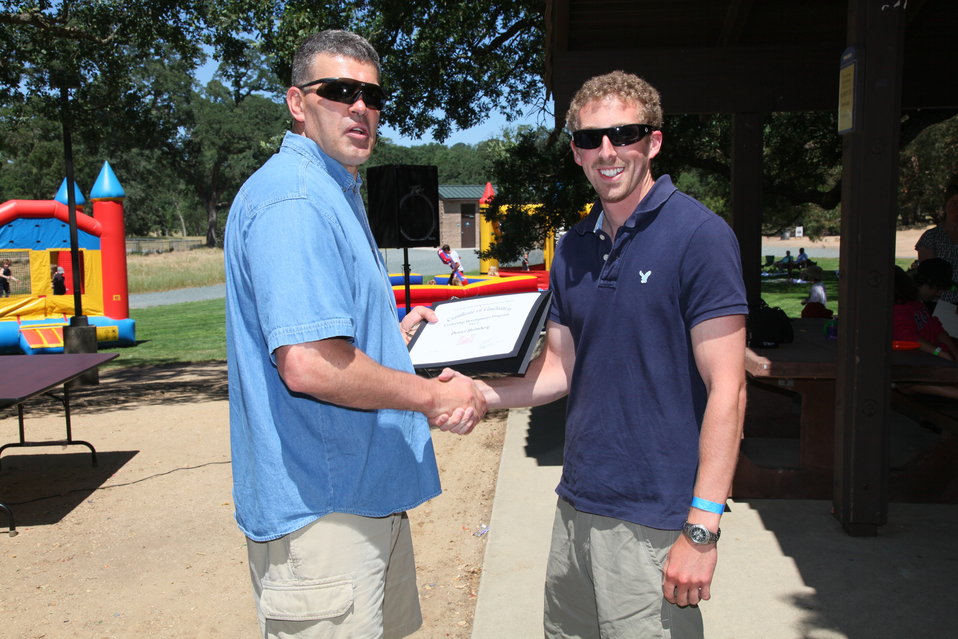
2011 Annual Picnic